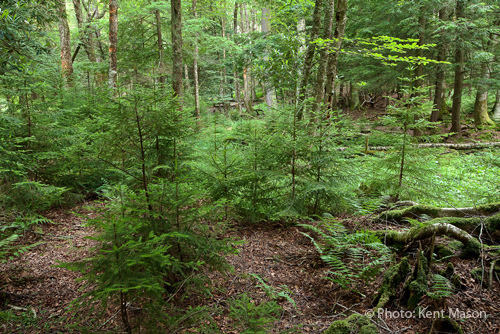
Red Spruce Understory